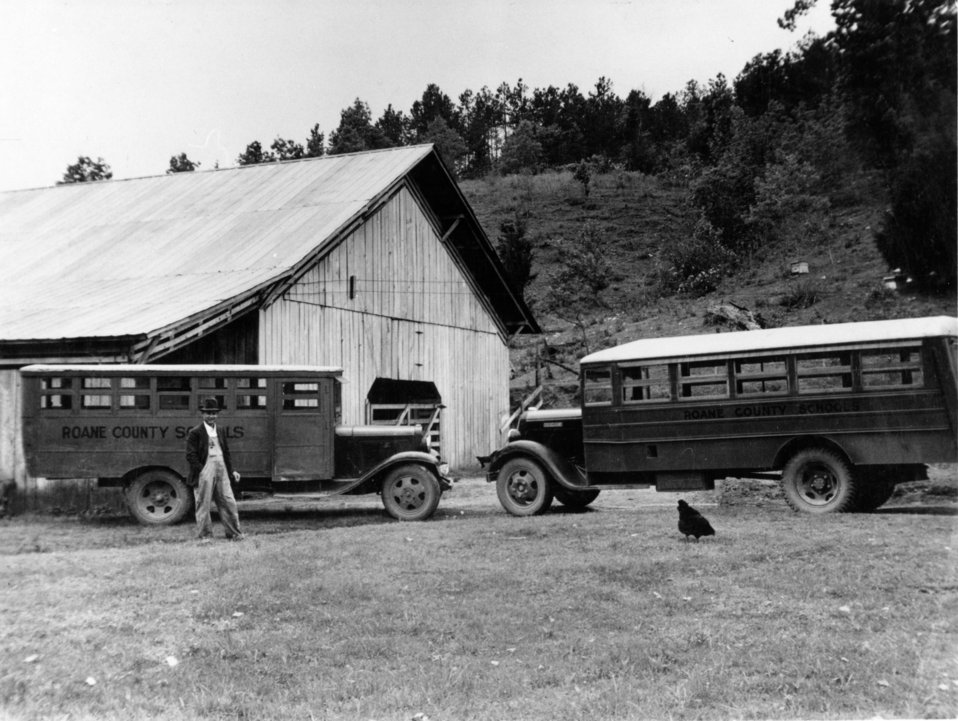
Early settlers at Oak Ridge